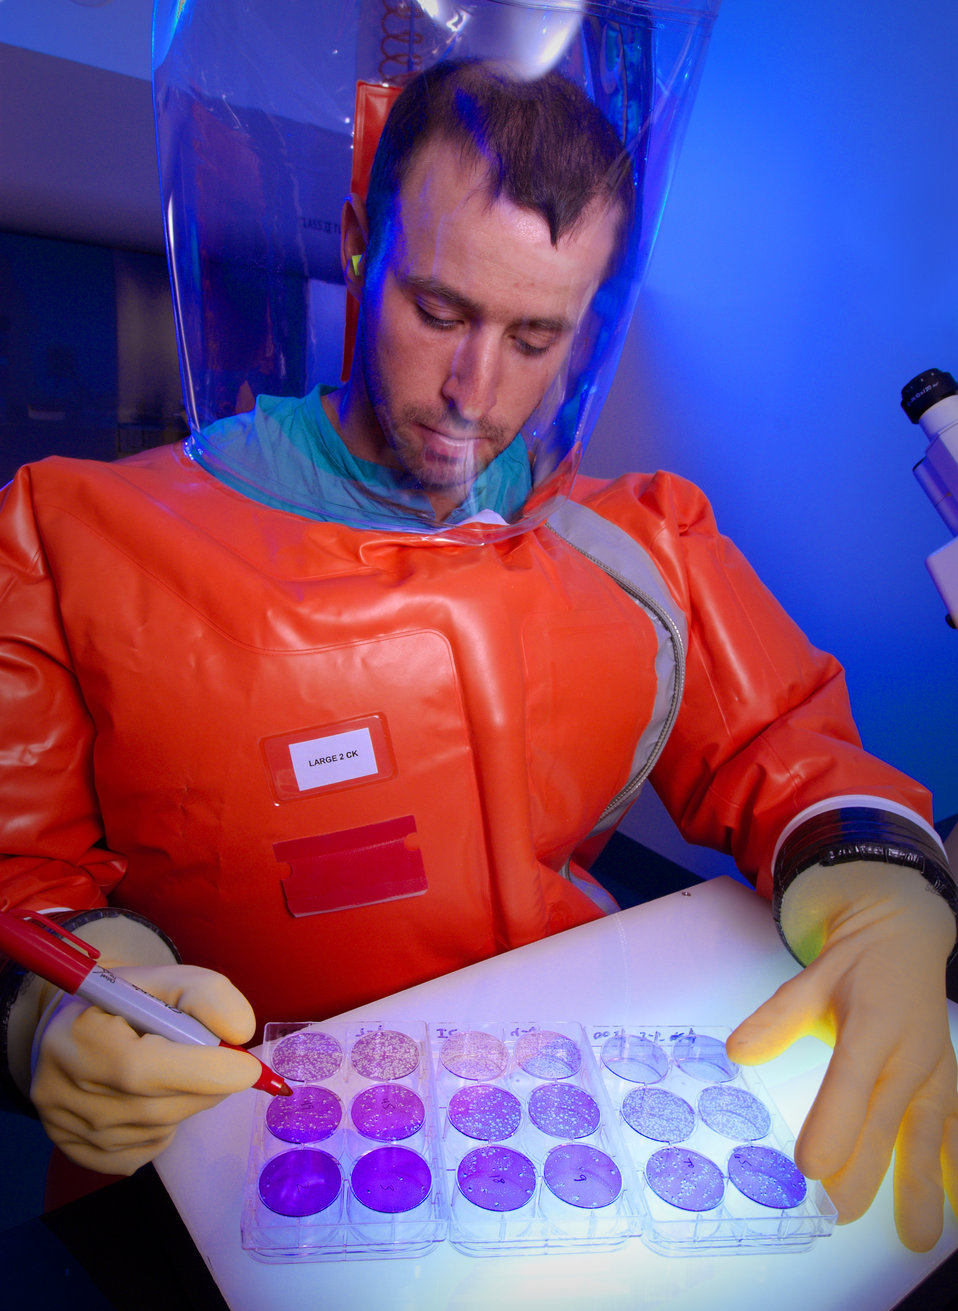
Depicted here in this 2007 photograph, was Centers for Disease Control microbiologist, and Special Pathogens Branch (SPB) staff member, as he was in the process of counting viral plaques within fixed monolayers of cells, which had been set atop a light box. While inside the organization's Biosafety Level 4 (BSL-4) laboratory, this activity was taking place, thereby, enabling the laboratorian to titrate a viral stock. He was outfitted in an orange, air-tight, self-contained, positively-pressurized suit, which kept him free of possible contamination. See PHIL 10725 for another view of this activity.